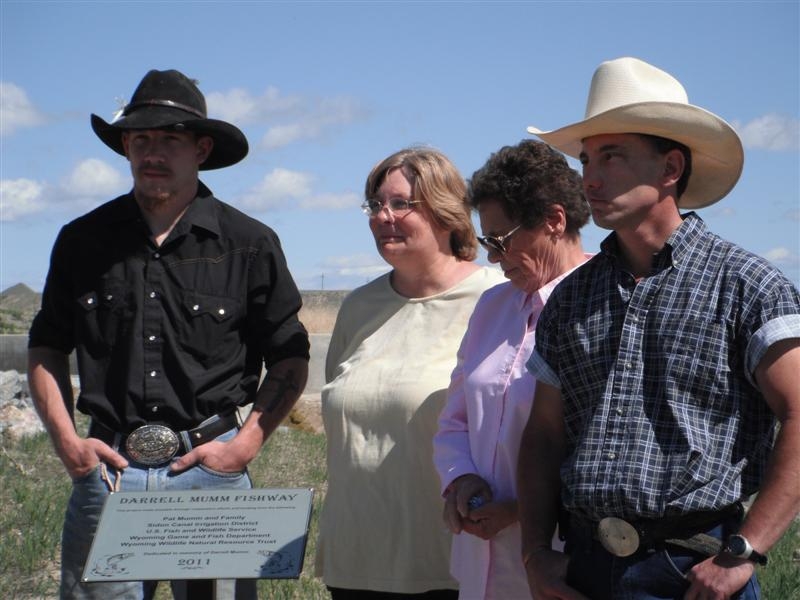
Mrs. Mumm with Children and Grandchildren

Mrs. Mumm survives her husband the landowner, who allowed the fishway project to be built on his property, but passed away prior to its completion. Mrs. Mumm stands with her children and grandchildren at the dedication of the fishway.